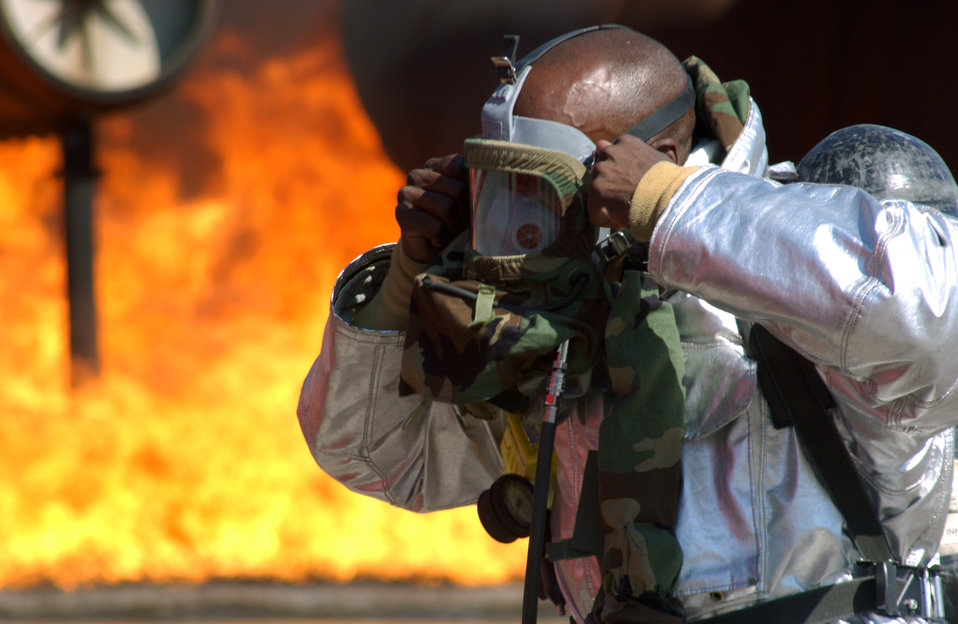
Fighting fires

VOLK FIELD AIR NATIONAL GUARD BASE, Wis. - A firefighter from the 167th Airlift Wing in Martinsburg, W. Va., dons his protective gear during a readiness training exercise here Sept. 21. The West Virginia Air National Guardsman was responding to a simulated aircraft accident.